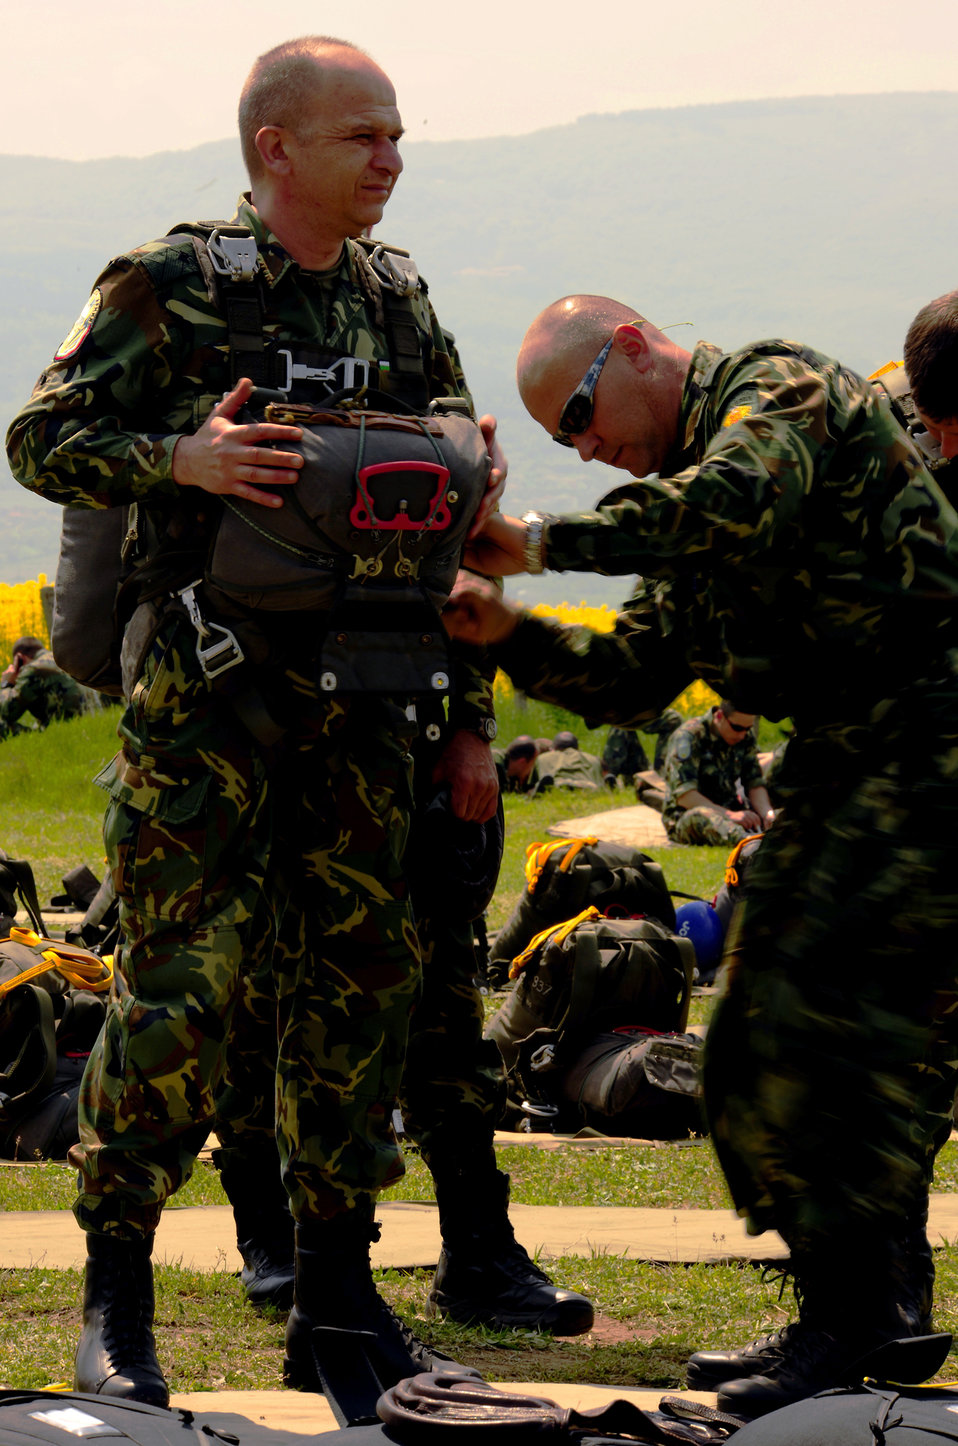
THRACIAN SPRING 10

Bulgarian Army Brig. Gen. Plamen Lilov prepares for a static line jump from an Air Force C-130 Hercules during Exercise Thracian Spring 2010 April 23, 2010, at Plovdiv Airport in Bulgaria. General Lilov is the commander of the Bulgarian 68th Special Force Brigade.